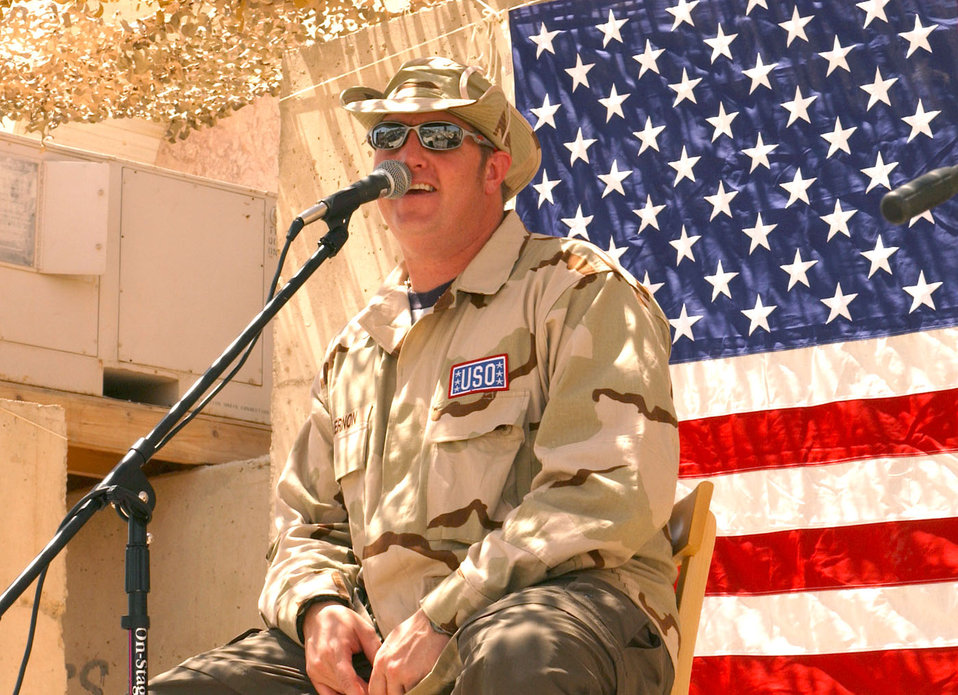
USO brings Rascal Flatts to Baghdad

BAGHDAD, Iraq -- Gary LeVox, lead singer for country music group Rascal Flatts, performs for Airmen and Soldiers at Baghdad International Airport on Aug. 5 from a make-shift stage behind a building that was once Saddam Hussein's military base operations facility. The group was here as part of a United Services Organization tour.